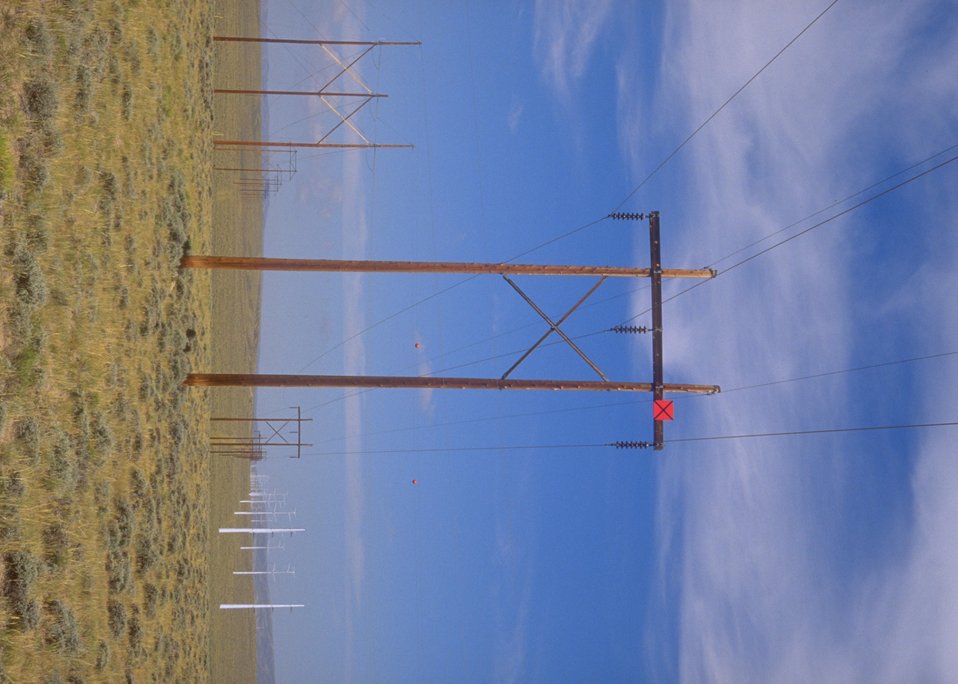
ROW's - Electric power lines along the Oregon Trail west of Casper, WY.